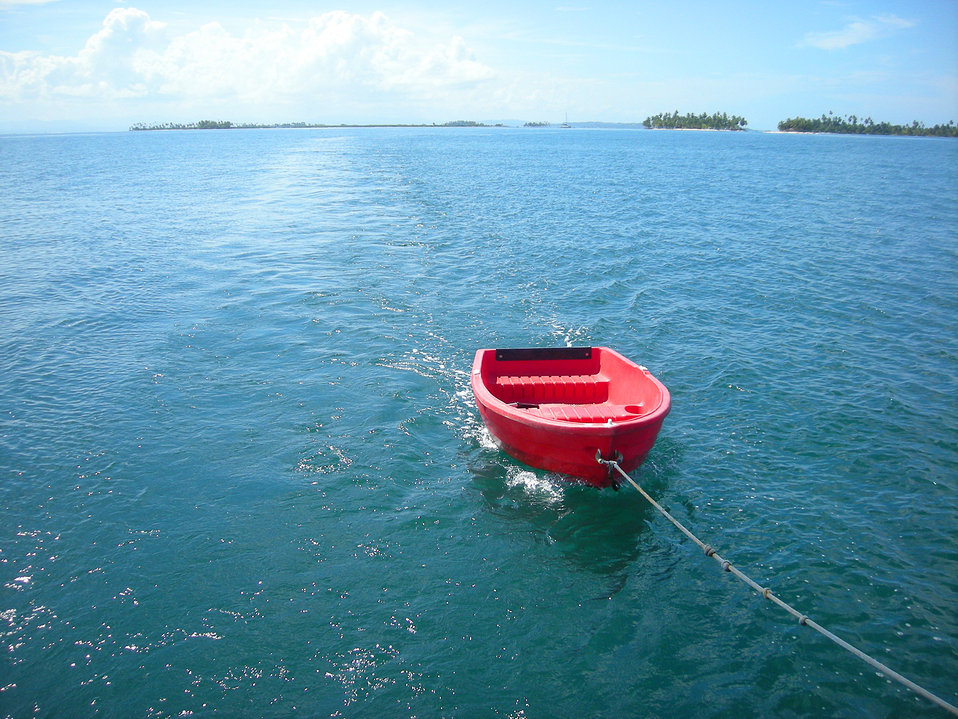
Red dinghy for the andiamo sailing boat, panama.